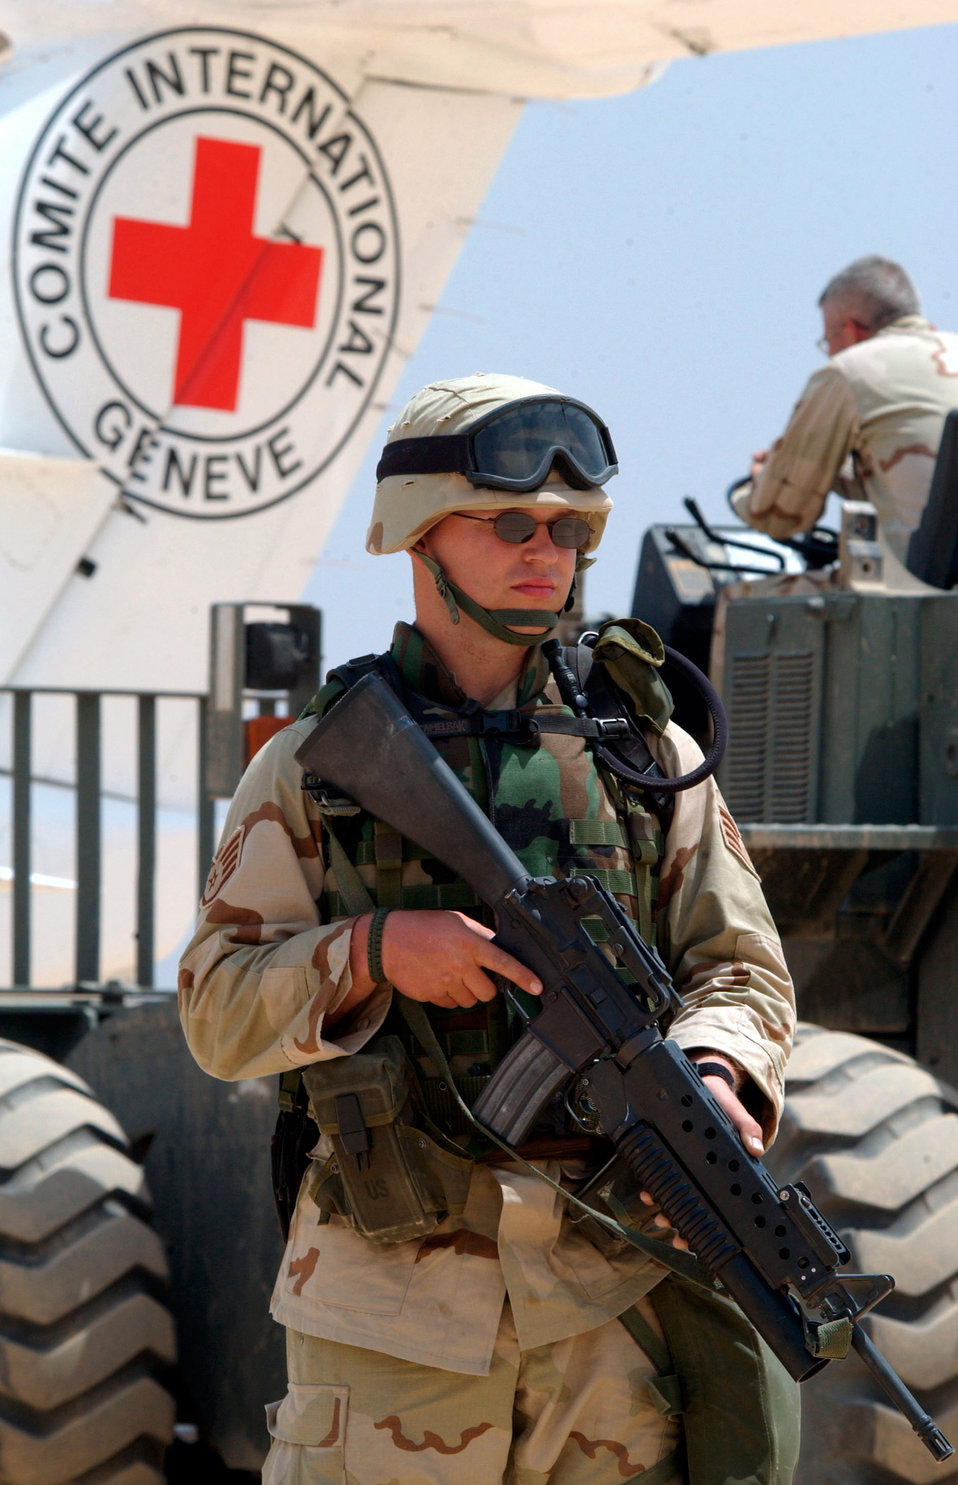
Guardian

OPERATION IRAQI FREEDOM -- A U.S. Air Force security forces member provides airfield security for the first civilian aircraft that landed on the commercial runway at Baghdad International Airport on April 24, 2003. Baghdad International Airport is a base of operations for U.S. troops, cargo and humanitarian airlift for Operation Iraqi Freedom.